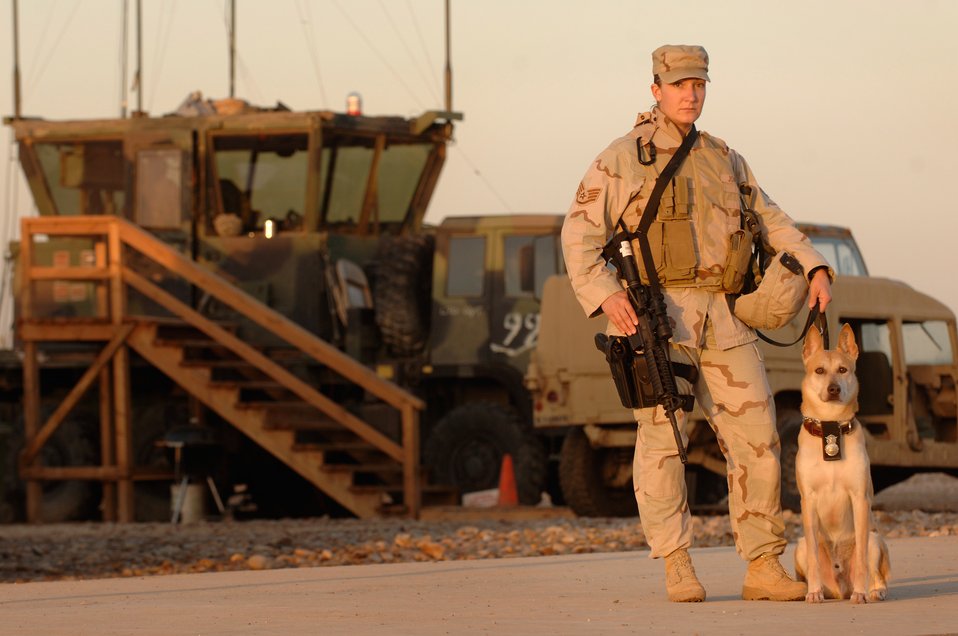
Partners

K-9 handler Staff Sgt. Alissa Jones and 7-yr-old